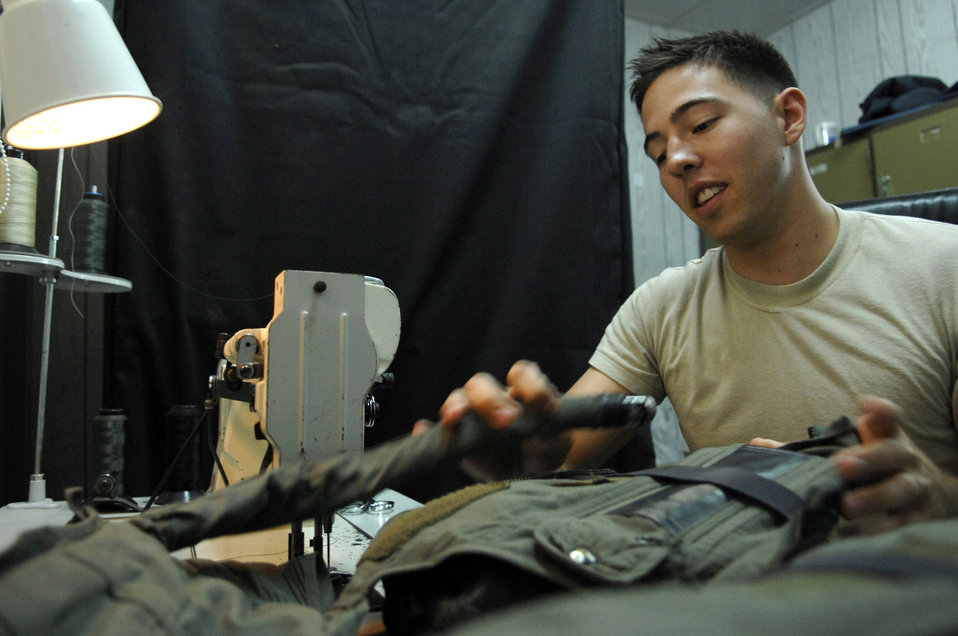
Airmen work to keep pilots safe

Senior Airman Nicholas Sanders inspects for tears and holes in an anti-G suit June 23 at Joint Base Balad, Iraq. The suit is worn by F-16 Fighting Falcon pilots to combat the gravitational forces experienced during high-speed maneuvers. The suit prevents blood from rushing rapidly out of the brain, helping the pilot to maintain consciousness during flight. The technicians are responsible for the maintenance and operability of all the F-16 pilot gear, including their helmets and survival equipment. Airman Sanders is a 77th Expeditionary Fighter Squadron aircraft equipment technician deployed from Shaw Air Force Base, S.C.